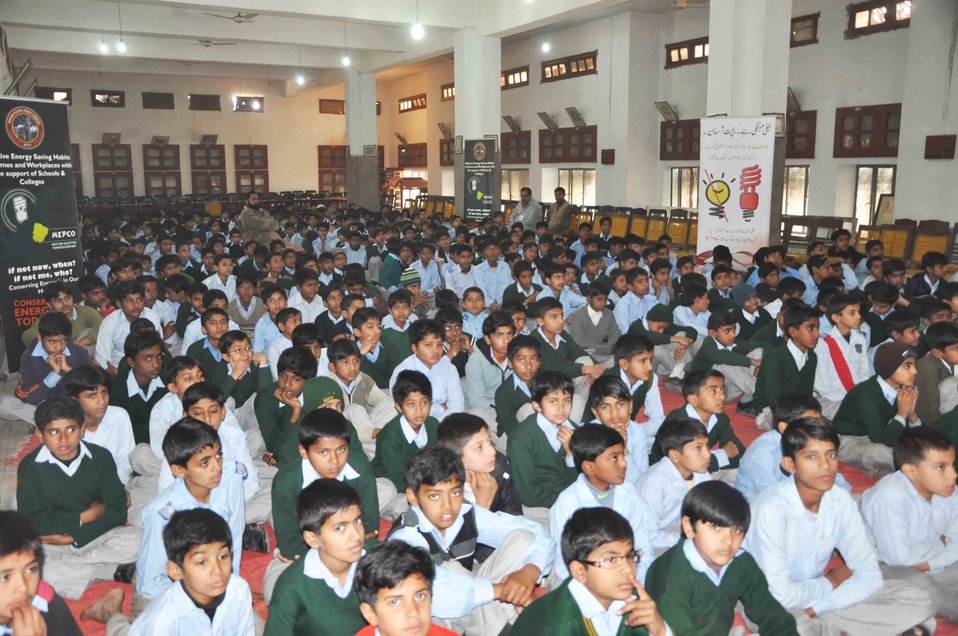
USAID enlightens Young Minds with Energy Conservation Tips

Multan Electric Power Company (MEPCO) with the assistance of the USAID Power Distribution Program has taken up the responsibility and is spreading the message to people in the southern belt of Punjab province. Thus far, an outreach campaign for school students has reached out to over 12,000 male and female students in Multan, where each of these students have pledged to share the energy saving tips with 5 of their friends and family members.

“I will tell my mother to change the yellow bulbs with energy savers which could reduce our electricity bill up to 80%.” Govt. Muslim Girls High School Anam Zahra